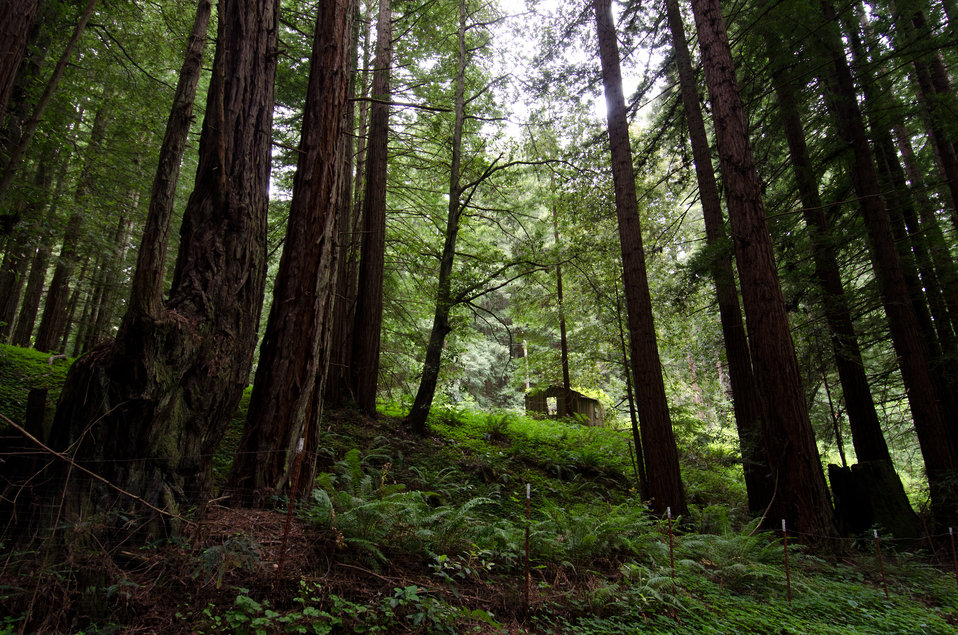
An abandoned building, and multiple cathedral growth redwood trees in a private forest in Santa Cruz County, CA, on Friday, June 17, 2011. Cathedral trees are a group of redwoods that grow in a circle around a host stump or tree, from which they sprouted. Assisting landowners when they want help in the management of their private forest is a factor in the America’s Great Outdoors Initiative (AGO).